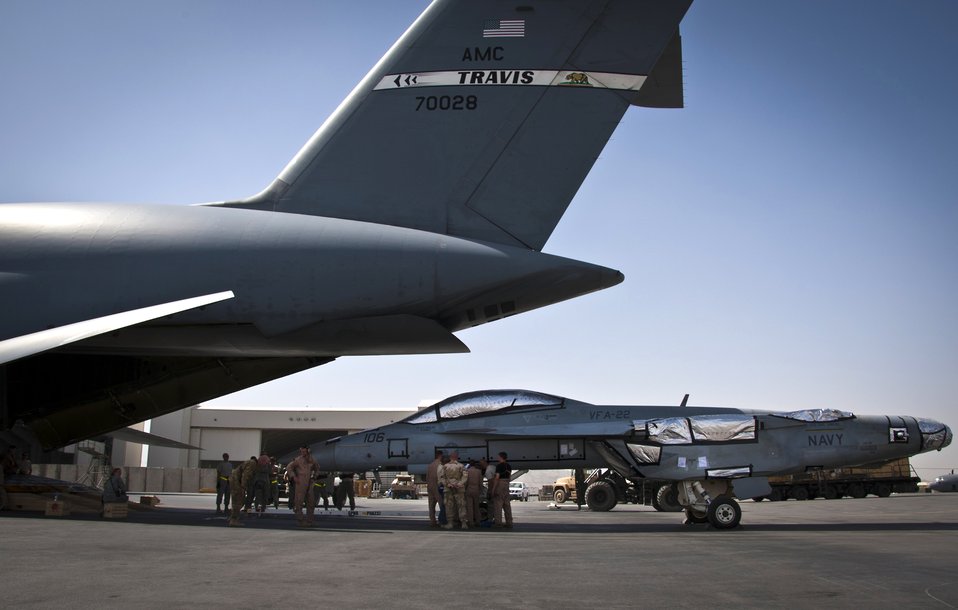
Kandahar crews load F/A-18 onto C-5

Airmen look over a load plan as they prepare to load an F/A-18 Super Hornet onto a C-5 Galaxy on Aug. 18, 2011, at Kandahar Airfield, Afghanistan. This marked the first time a U.S. fighter jet had been successfully loaded into a cargo aircraft for transport back to the U.S. The Airmen are assigned to the 451st Expeditionary Logistics Readiness Squadron at Kandahar Airfield and the 22nd Airlift Squadron at Travis Air Force Base, Calif.